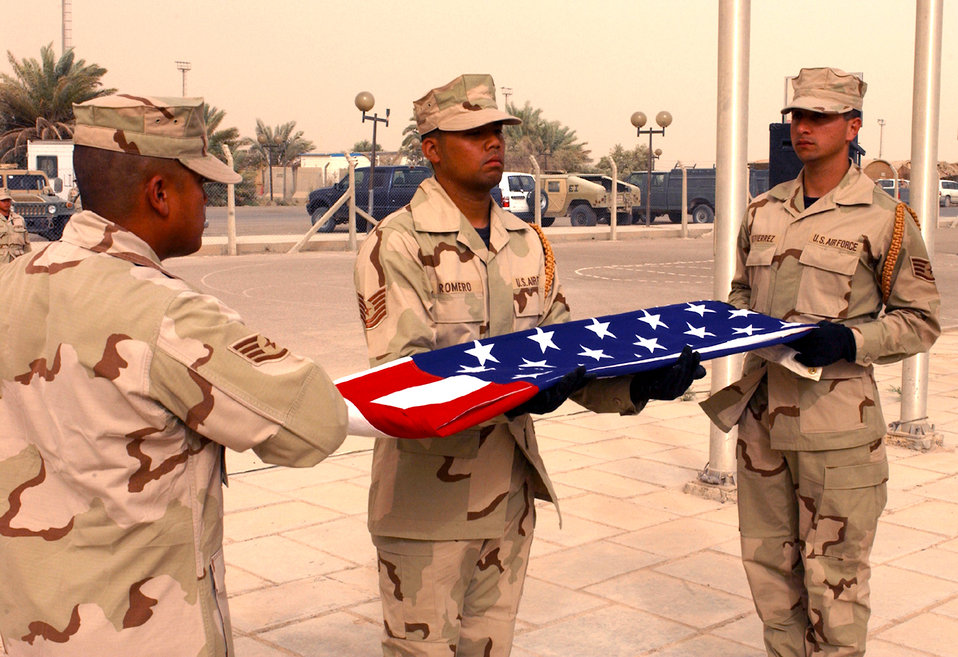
Honoring freedom

BAGHDAD, Iraq -- (From left) Staff Sgt. Aldrin Saguin, Tech. Sgt. Joseph Romero and Staff Sgt. Steve Gutierrez fold the flag during a retreat ceremony here celebrating Independence Day. The Airmen are honor guard members and are assigned to the 447th Expeditionary Civil Engineer Squadron here. They are deployed from Kadena Air Base, Japan.